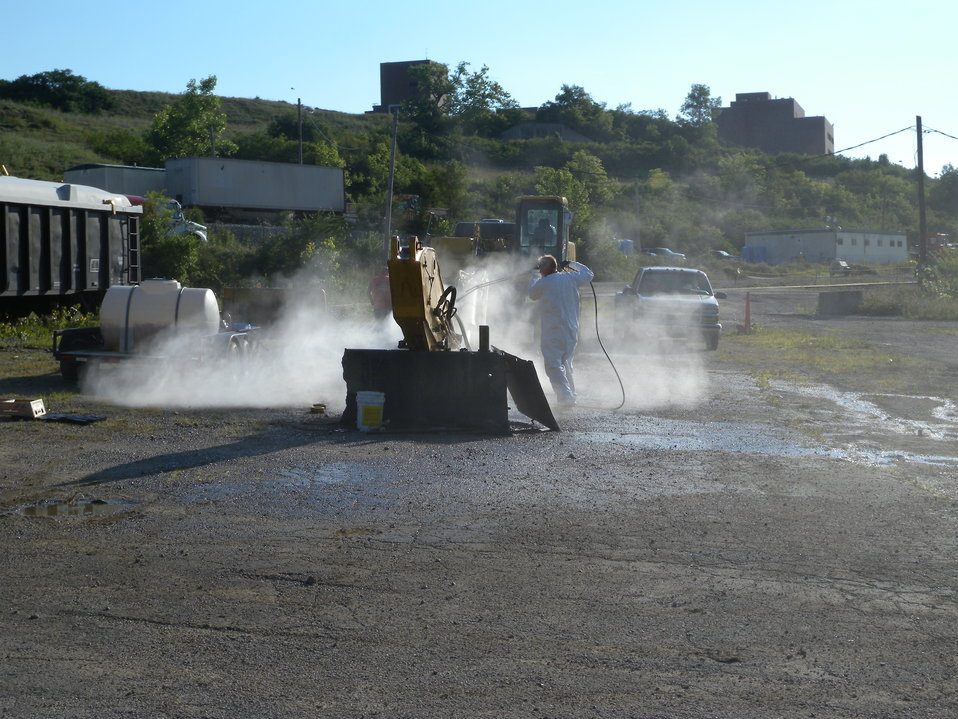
Recovery Act Project Brings End to Mound Site Cleanup Activities

The Recovery Act invested $17.9 million in the completion of EM’s legacy cleanup activities at the Mound Site in 2010.
Recovery Act workers disposed nearly 20,000 cubic meters of soil and demolition debris in the cleanup, which focused on the Operable Unit-1, a former mixed-waste landfill at the 306-acre site. The Recovery Act cleanup was the final remediation project at Mound.
The federal government is in the process of transferring ownership of the site to the Mound Development Corporation, a community reuse organization.